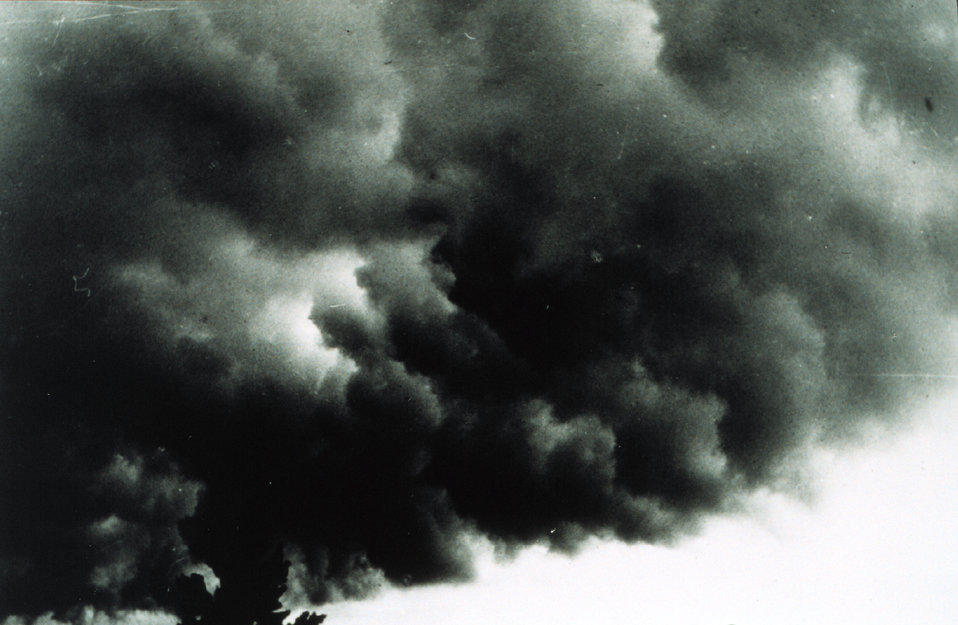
Squall line with potentially tornadogenic clouds